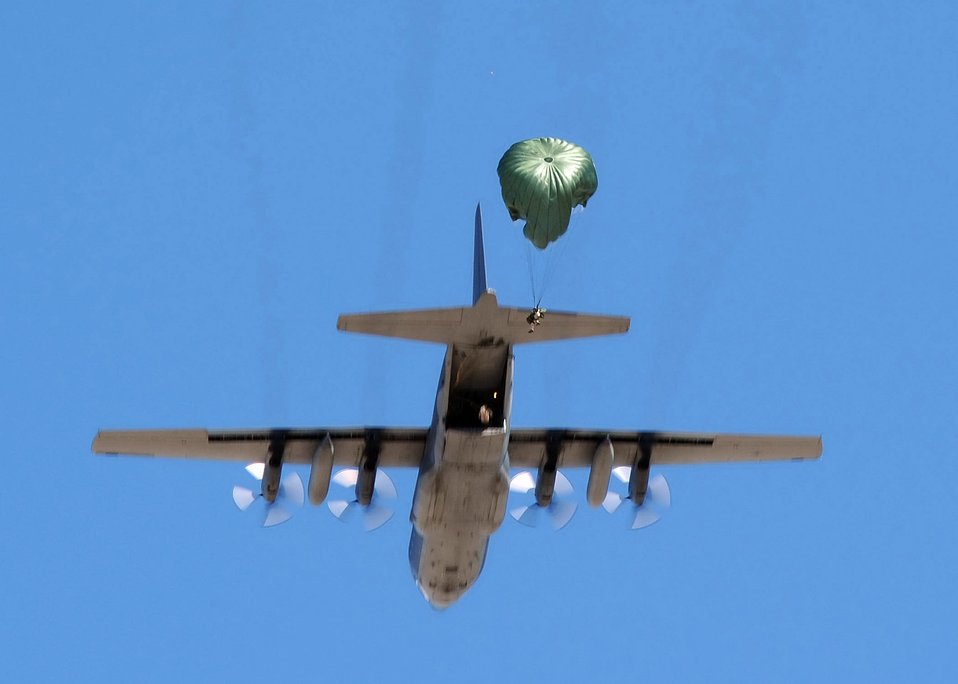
Multi-lift airdrop at Davis-Monthan AFB

Airmen from the Air Force Reserve Command's 306th Rescue Squadron parachute out of a HC-130 Aug. 15 at Davis-Monthan Air Force Base, Ariz. The Airmen were participating with members of the 79th Rescue Squadron in the first multi-lift HC-130 airdrop here. They were able to accomplish seven drops from different altitudes.